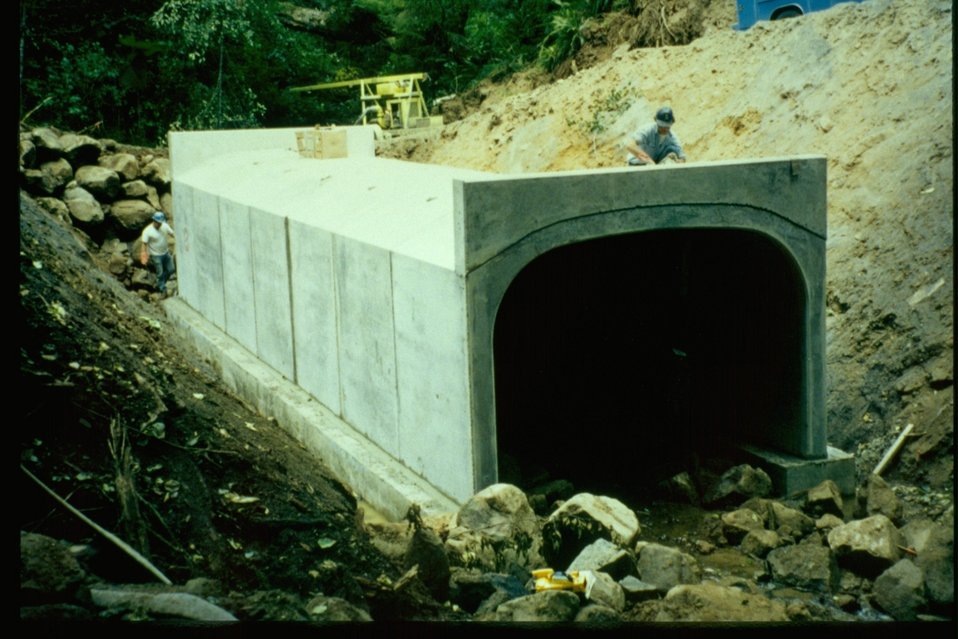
Cole Creek culvert replacement for fish passage.